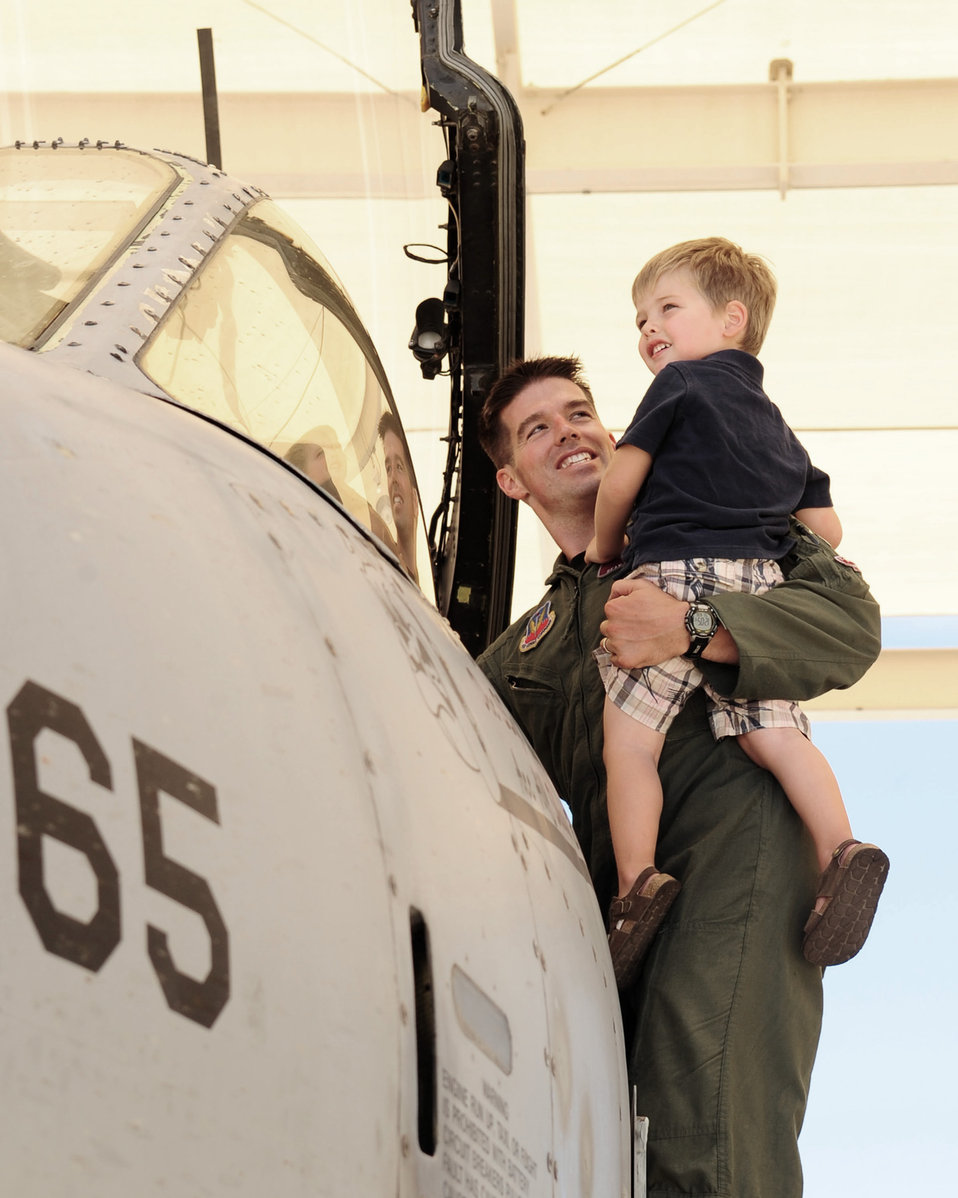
Olmsted Scholar Program

Maj. Sean Baerman holds his three-year-old son Teague, as he shows him the cockpit of an A-10 Thunderbolt II June 8, 2010. The major was one of 17 military officers selected by the George and Carol Olmsted Foundation to be a student in Olmsted Scholar Class of 2011. Major Baerman and his family will spend the next few years living in Buenos Aires, Argentina, as he completes a Master of International Relations degree at the University of Belgrano.